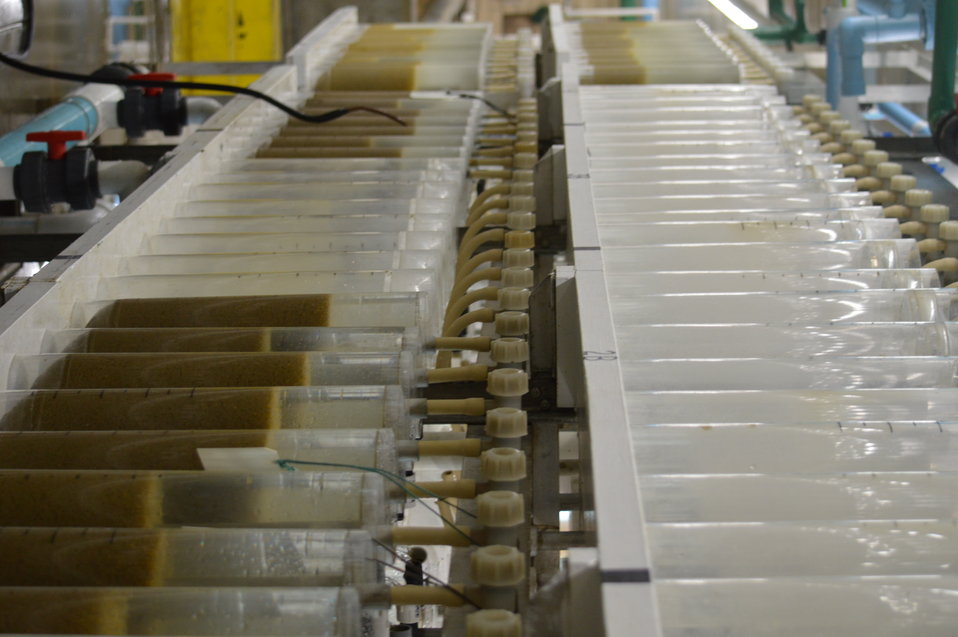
Rows of upwelling jars

Garrison Dam National Fish Hatchery in North Dakota.